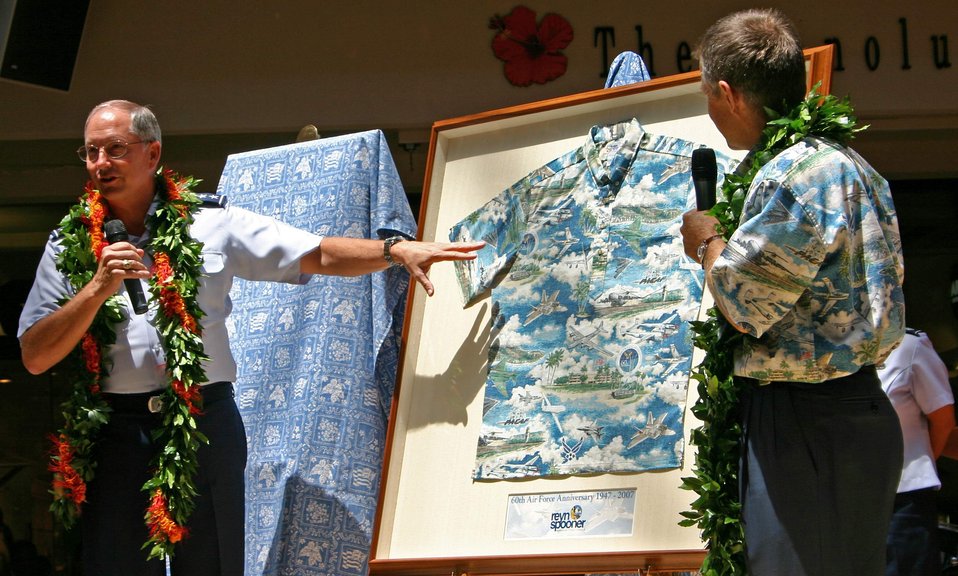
PACAF unveils 60th anniversary aloha shirt

Tim McCullough (right) presents the Air Force 60th Anniversary Aloha shirt to Lt. Gen. Loyd S.